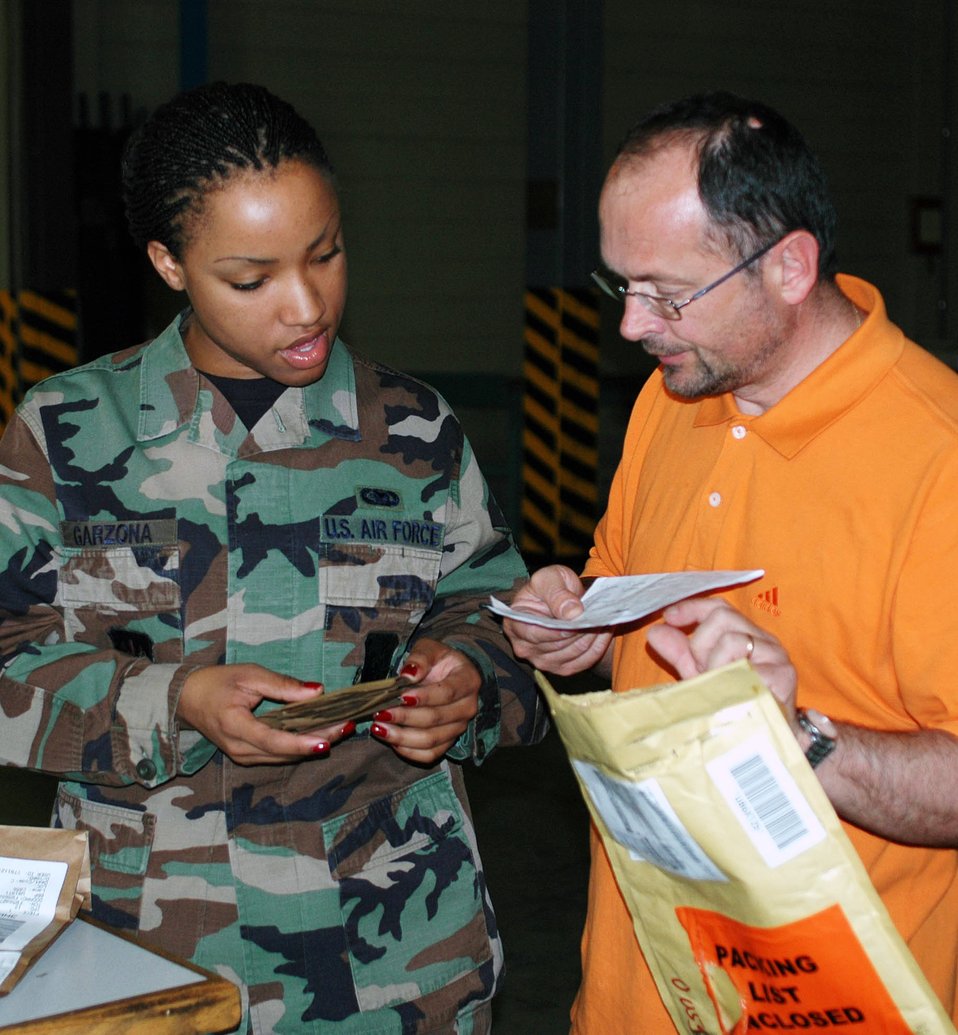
AFSO 21 at Aviano Air Base, Italy

Staff Sgt. Danielle Garzona and Giorgio Bortolotto check a package May 31 received at an Aviano Air Base, Italy, supply warehouse. Sergeant Garzona is the lead receiving technician and Mr. Bortolotto is a warehouse supervisor with the 31st Logistics Readiness Squadron.